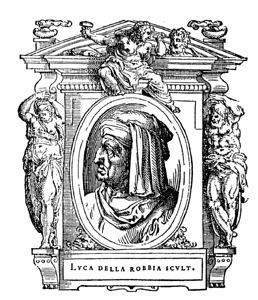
Illustratio from 'Le Vite' by Giorgio Vasari, edition of 1568. For the artist portrayed see filename